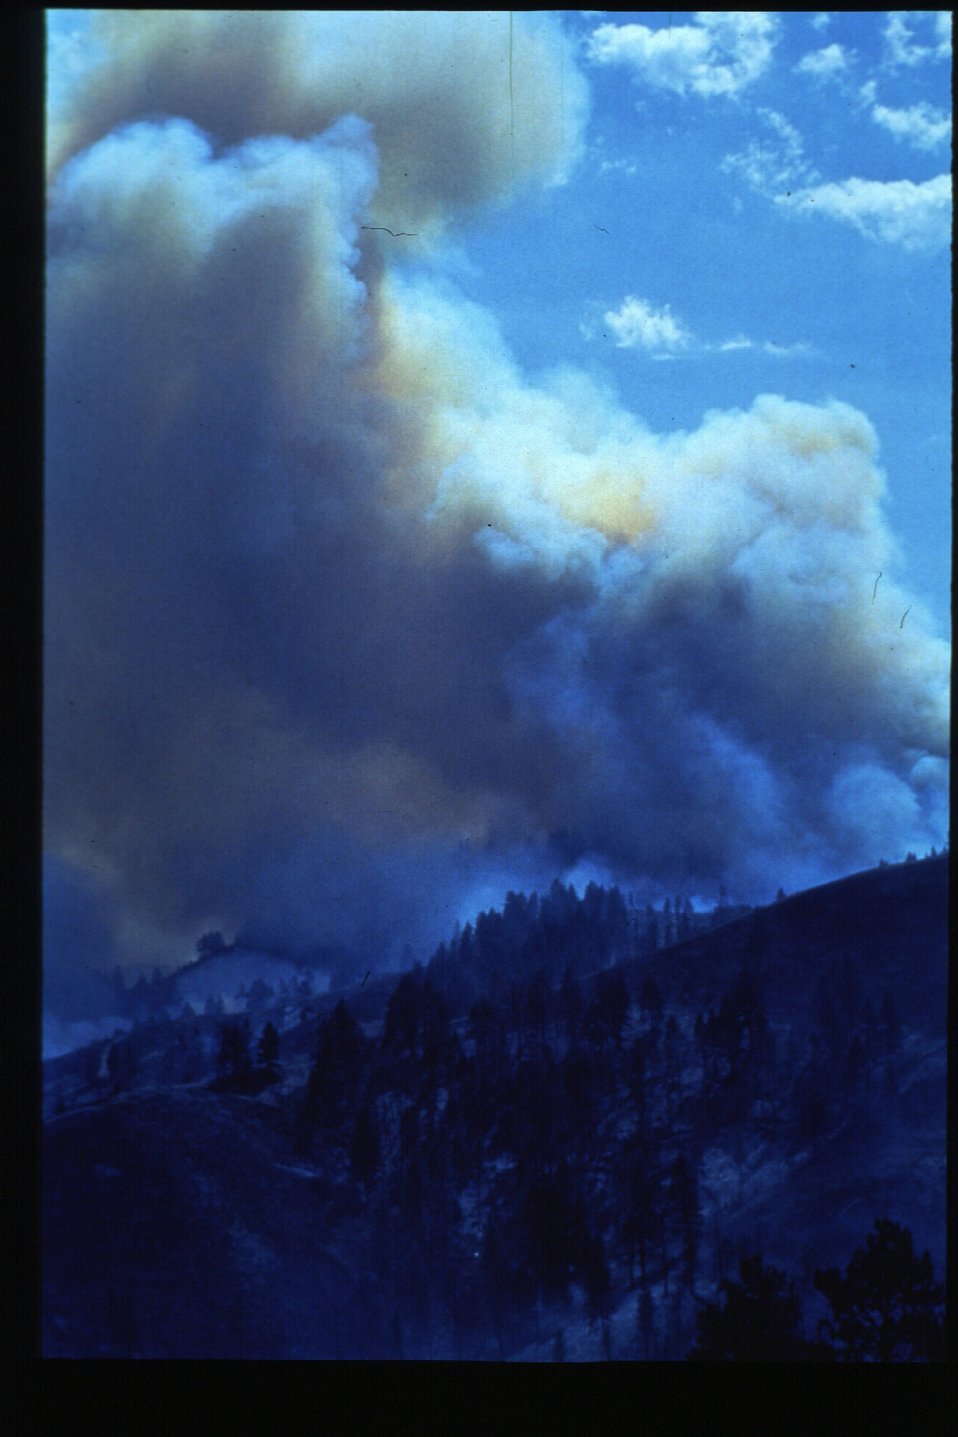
Boise Foothills Fire Danskin Mountains and South Fork of Boise River Smoke Four River Field Office LSRD Lower Snake River District